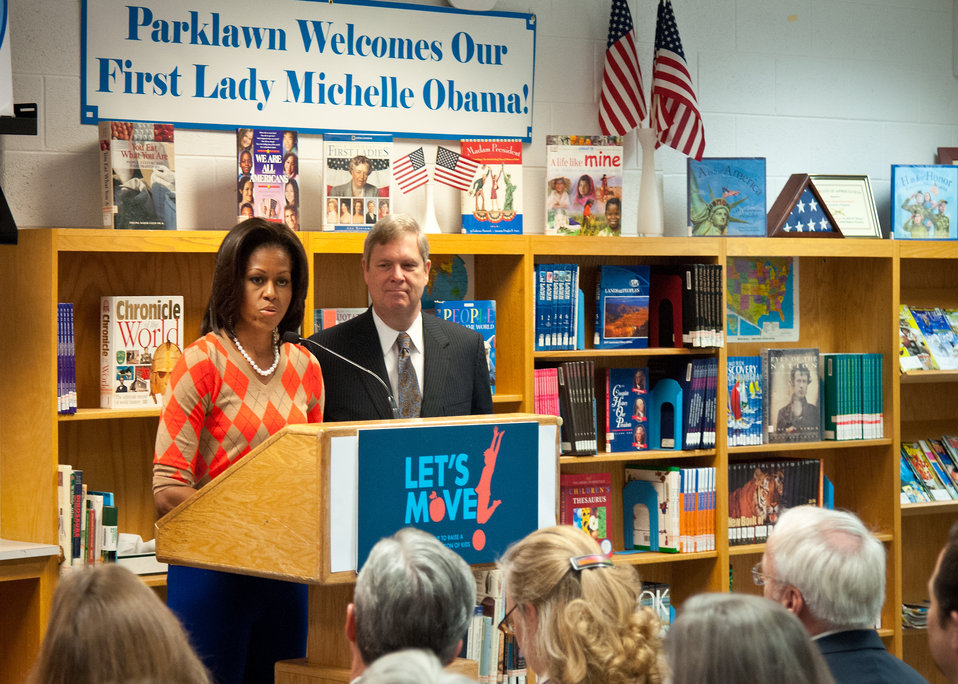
First Lady Michelle Obama joined Agriculture Secretary Tom Vilsack at Parklawn Elementary School to speak with faculty and parents about the United States Department of Agriculture’s new and improved nutrition standards for school lunches. An important accomplishment of the Healthy, Hunger-Free Kids Act that President Obama signed into law last year. Also, in In February 2010, First Lady Michelle Obama introduced “Let’s Move” incorporating the HealthierUS School Challenge into her campaign to promote a healthier generation of children. USDA is making the first major changes in school meals in over 15 years. The new standards encourage fruits and vegetables every day of the week, increasing offerings of whole grain-rich foods, offering only fat-free or low-fat milk and making sure kids are getting proper portion sizes at the Parklawn Elementary School Alexandria, Virginia, on Wednesday, January 25, 2012.